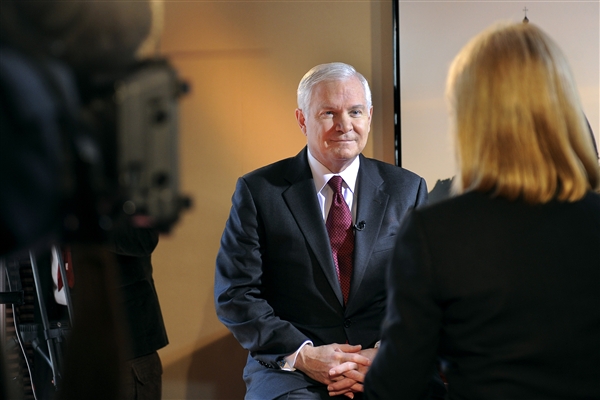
Don't ask, don't tell

Defense Secretary Robert Gates speaks with Greta Van Susteren, host of the Fox News program